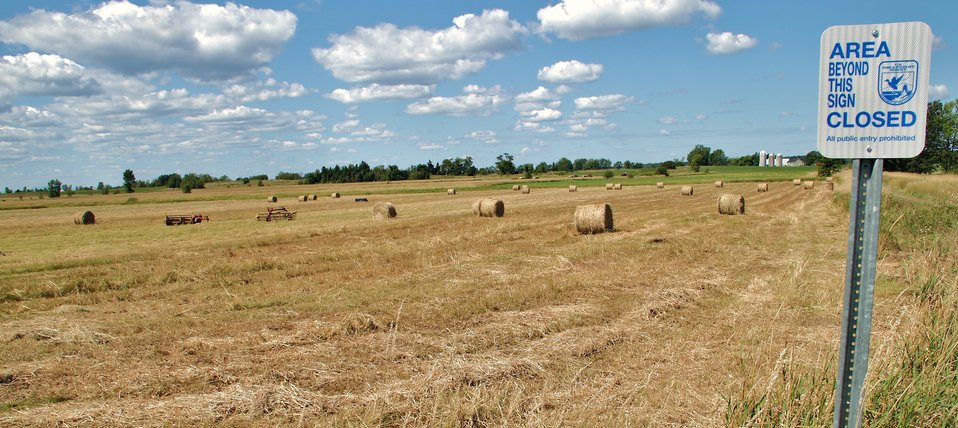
Missisquoi National Wildlife Refuge Haying grasslands

Grassland management at Missisquoi NWR